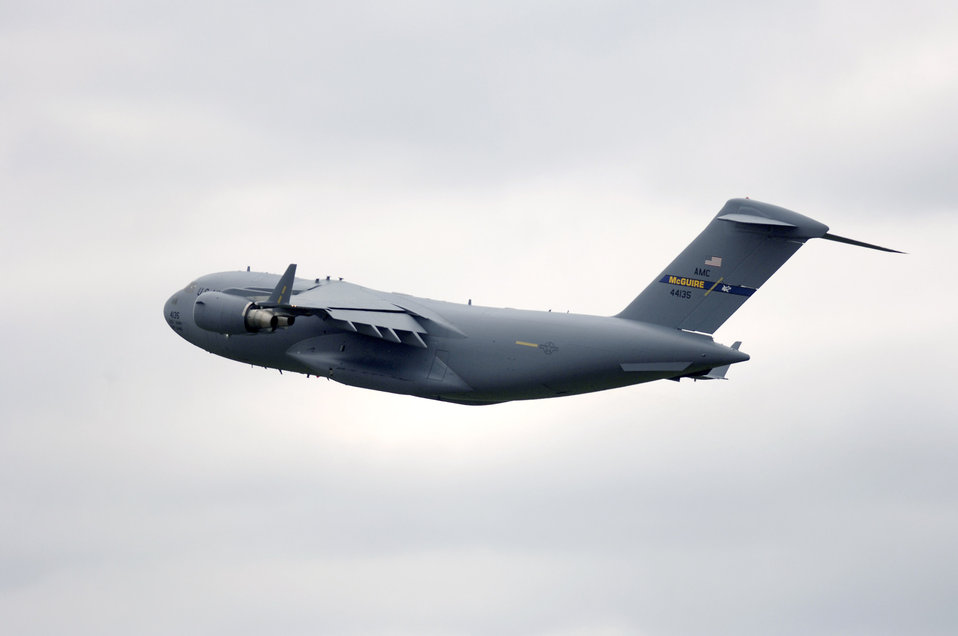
Globemaster in flight

A C-17 Globemaster III from the 305th Air Mobility Wing flies over McGuire Air Force Base, N.J., on Wednesday, May 10, 2006.